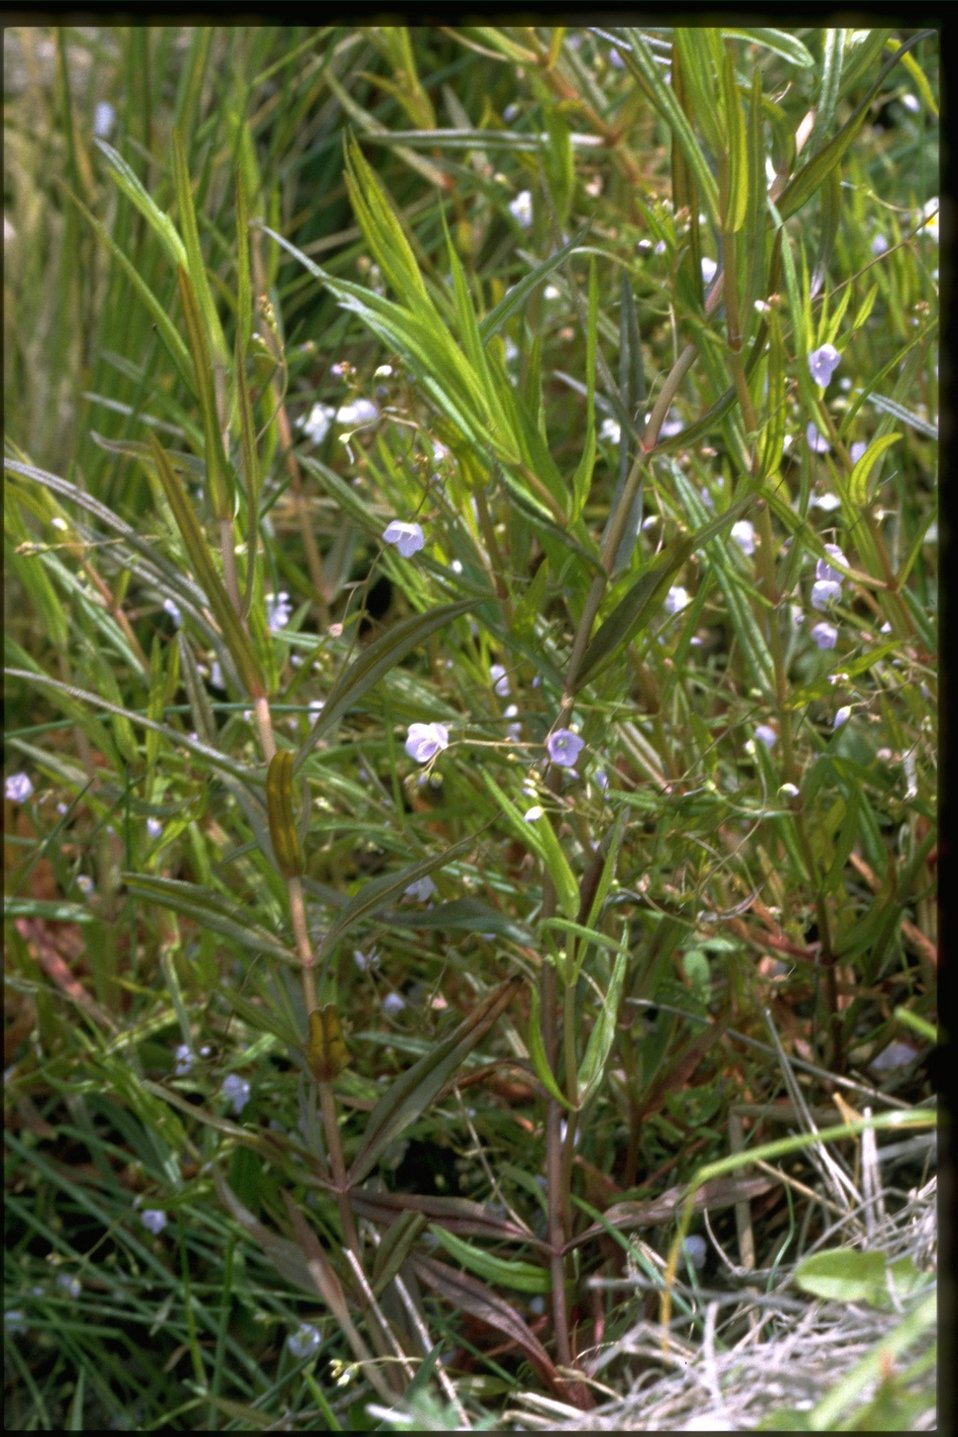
Farshot of Veronica americana.